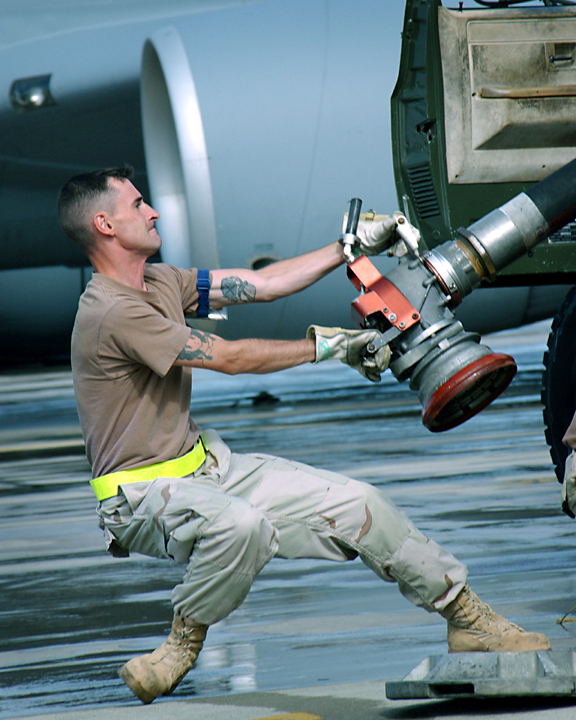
Fuels Airmen

OPERATION ENDURING FREEDOM -- Senior Airman Thomas Haefliger unloads the coupler from a fuel-servicing vehicle. The fuels element Airmen here have issued more than 10 million gallons of aviation fuel. Airman Haefliger is a refueling unit operator with the 40th Expeditionary Logistics Readiness Flight fuels element. He is deployed from Fairchild Air Force Base, Wash.